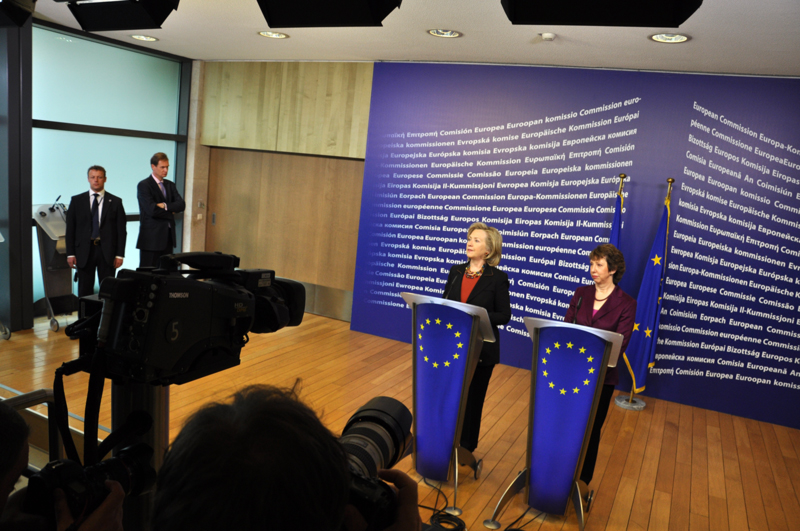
Secretary Clinton and EU High Representative Ashton Deliver a Joint Press StatementSecretary Clinton and EU High Representative Ashton Deliver a Joint Press Statement

U.S. Secretary of State Hillary Rodham Clinton and EU High Representative for Foreign Affairs and Security Policy, and Vice President of the European Commission, Catherine Ashton deliver their public statements on Pakistan to the press at the Berlaymont building in Brussels, Belgium, on October 14, 2010.